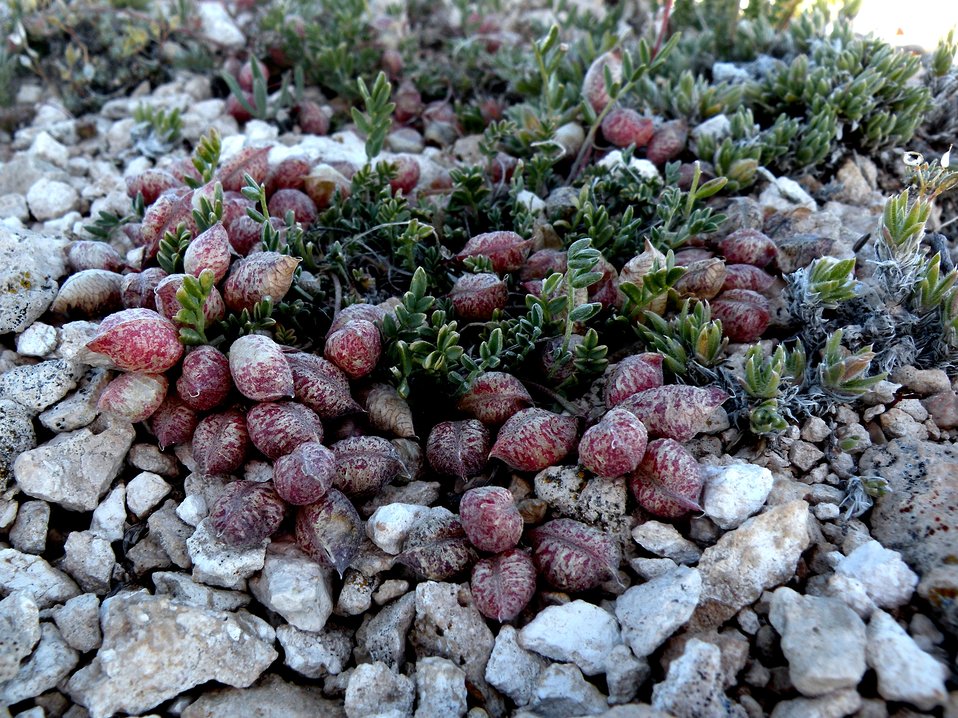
Heliotrope milkvetch ( Astragalus montii)

This rare milkvetch is restricted to alpine areas in central Utah, where it is found on windblown ridges between 10,500 ft. and 11,000 ft. in elevation. Heliotrope milkvetch is endemic to Sanpete and Sevier counties, UT. It is listed threatened.